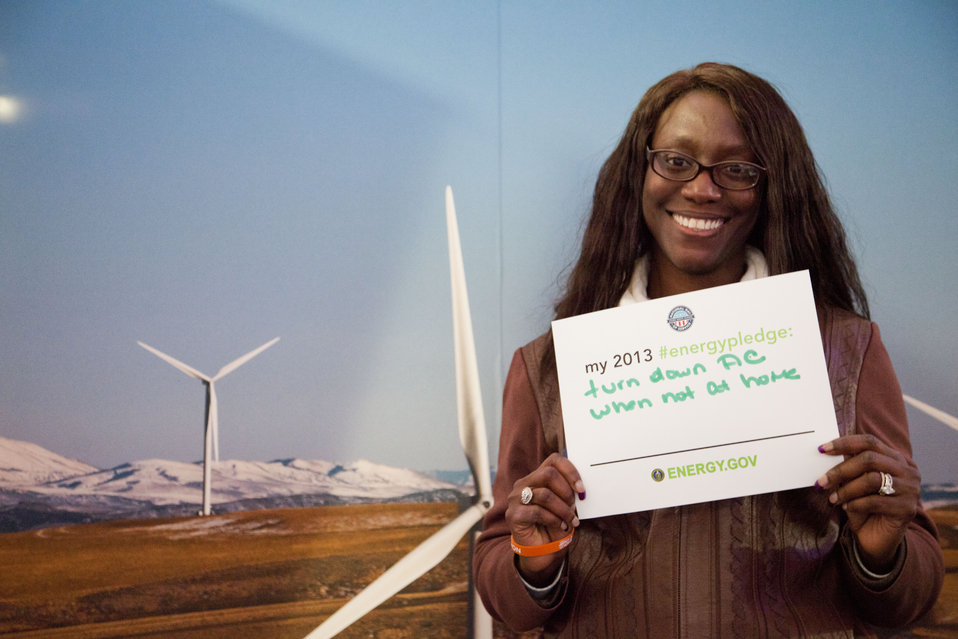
What's your #energypledge?